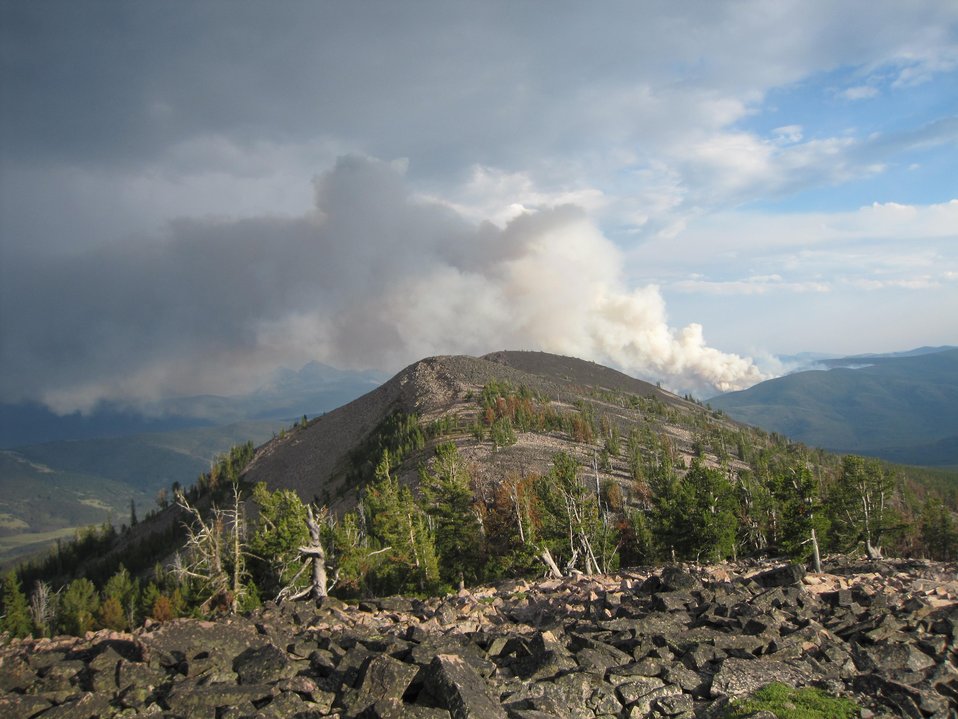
The Moose Meadow Fire in the Beaverhead-Deerlodge National Forest near Philipsbug, MT began on Jul. 25, 2013 by lightning has consumed approximately 3,400 acres and is approximately 30% contained.